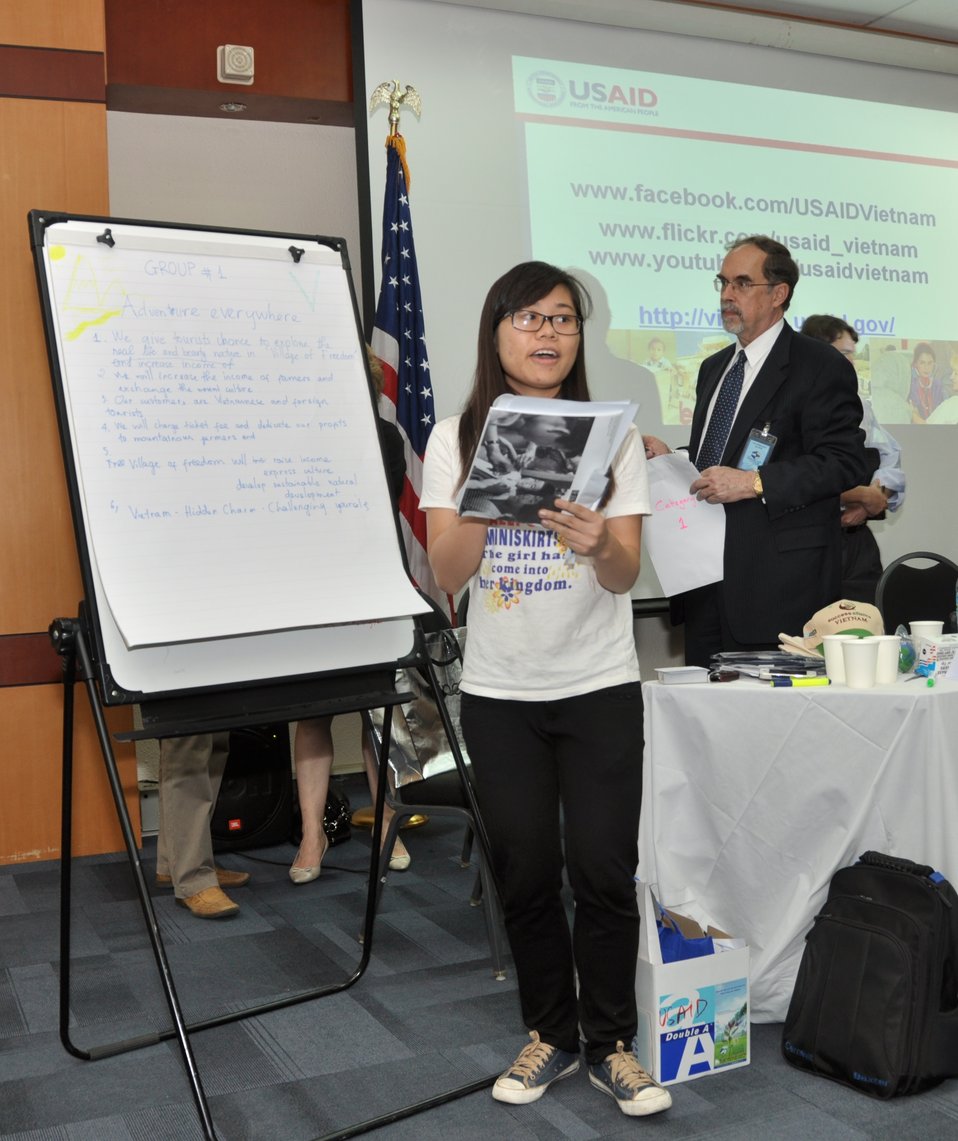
Vietnamese university students join the Business Plan Mashup exercise

Photo: @USAIDVietnam, November 16, 2012